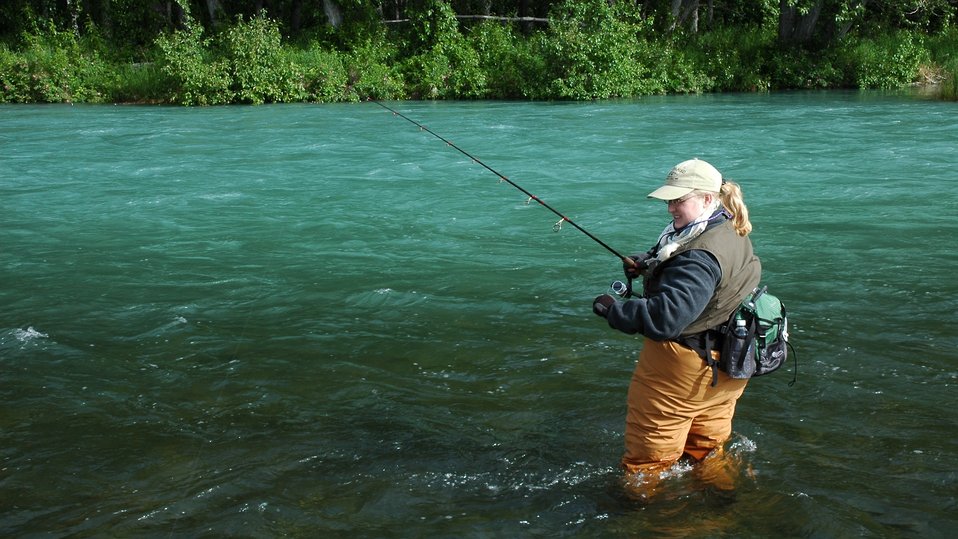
Angler at Kenai NWR Brett Billings USFWS

Angler at Kenai National Wildlife Refuge in Alaska.